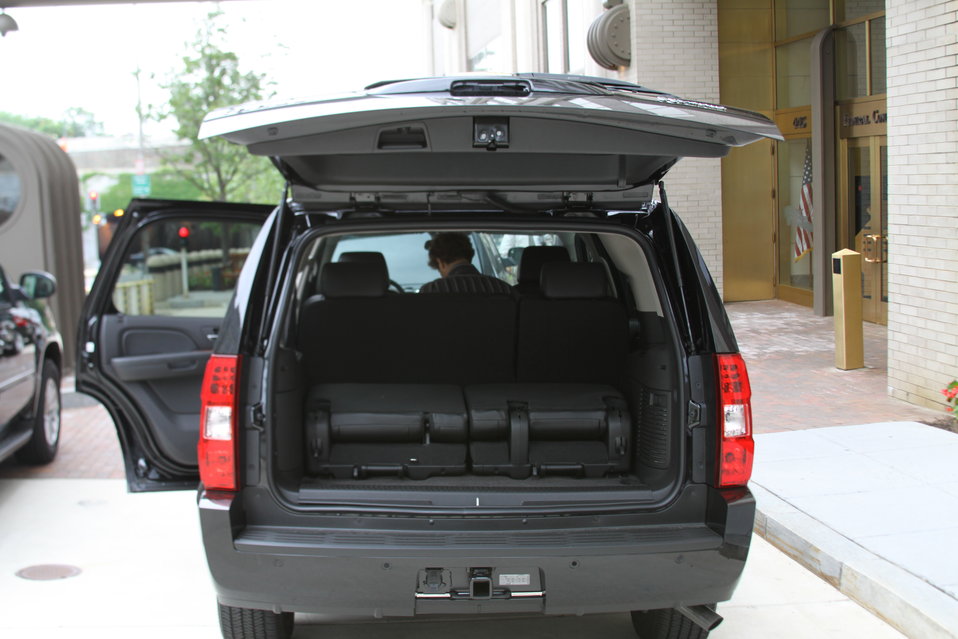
Tahoes 022